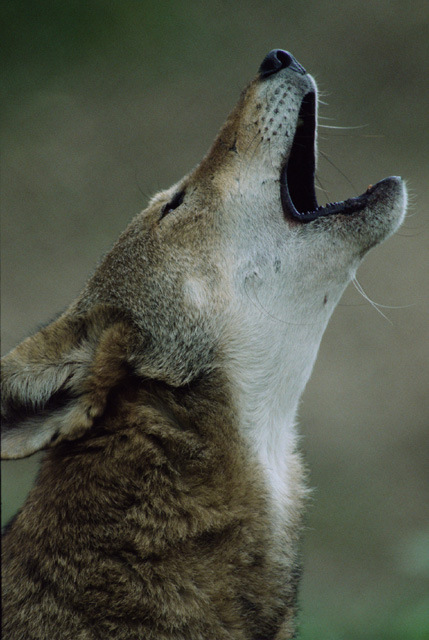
red wolf howl

Visitors come to hear endangered red wolves howl at Alligator River National Wildlife Refuge, NC.